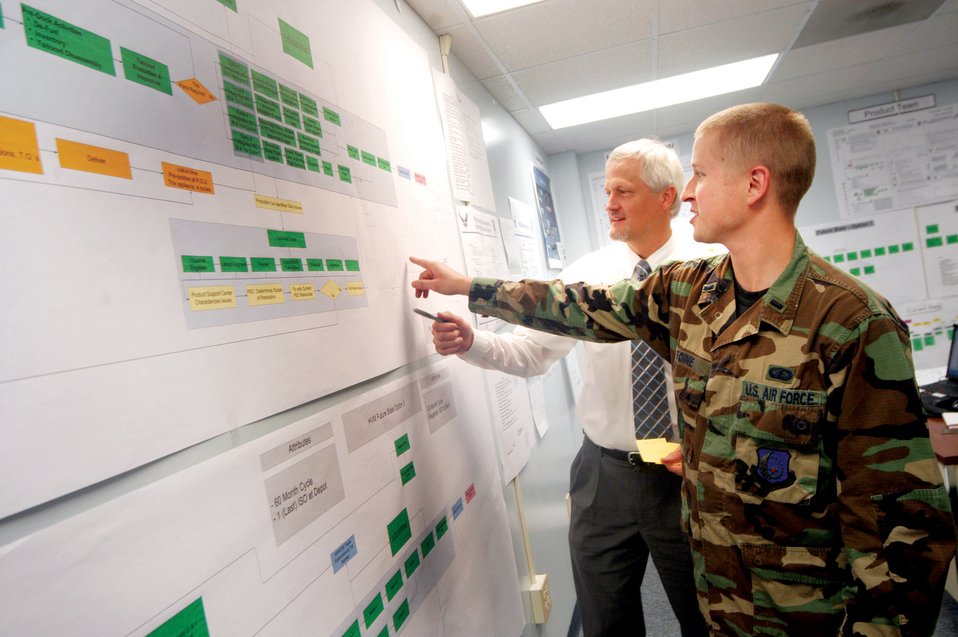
Mechanic-centric focus to improve aircraft availability

Ed Pratt and 1st Lt. Andrew Soine discuss the end-to-end high velocity maintenance program the team designed to lower maintenance impact on mission requirements, thus increasing aircraft availability. Mr. Pratt is a HVM team engineer and Lieutenant Soine is the HVM program manager. The team used Air Force Smart Operations for the 21 century program tools to establish the synchronized, integrated process.